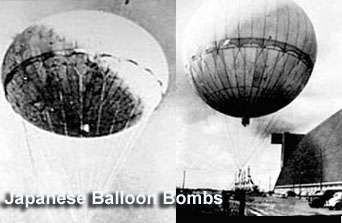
Japanese Balloon Bombs

On Nov. 3, 1944, the Japanese launched operational balloon bombs as a means of direct reprisal against the U.S. mainland as a result of the Doolittle Raid on Tokyo. The balloons, made of paper or rubberized silk, carried anti-personnel and incendiary bombs.